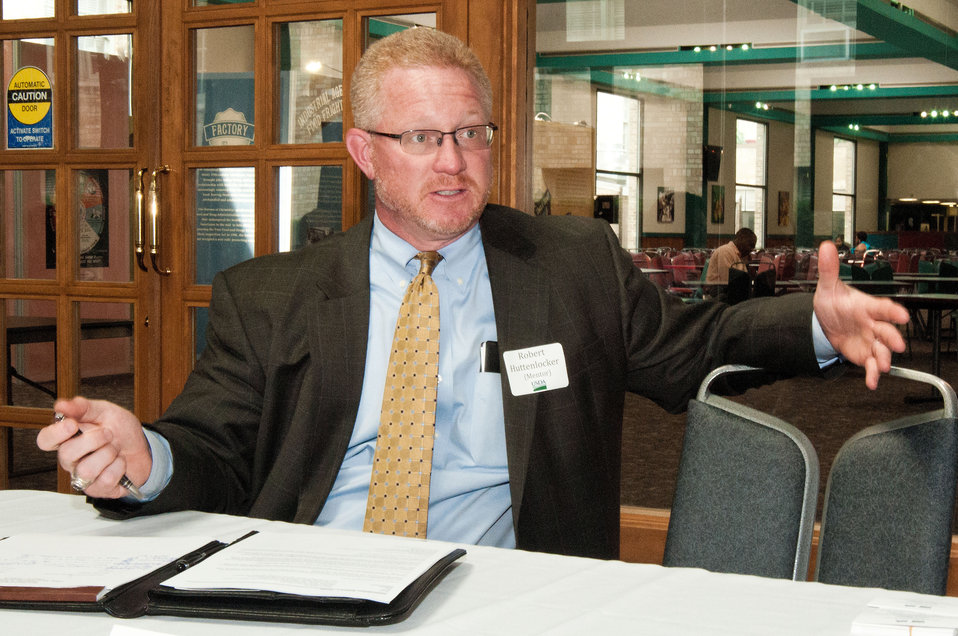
U.S. Department of Agriculture (USDA) Animal and Plant Health Inspection Service (APHIS) and mentor Rob Huttenlocker offers advice on “Career Development” at USDA’s Office of Human Resources Management (OHRM) Virtual University’s Fall Flash Mentoring Event at USDA in Washington, D.C. on Thursday, Sept. 6, 2012 in Washington, DC.